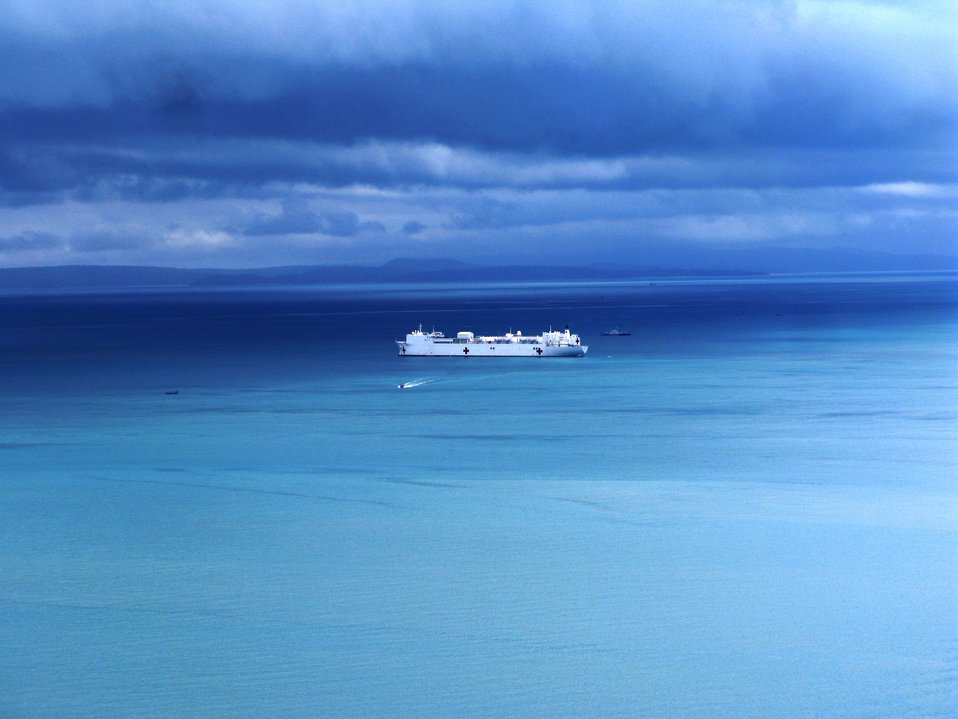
USNS Mercy Sails the Pacific Ocean

The Military Sealift Command hospital ship USNS Mercy (T-AH 19) sails the Pacific Ocean on June 15, 2010. Mercy is conducting Pacific Partnership 2010, the fifth in a series of annual U.S. Pacific Fleet humanitarian and civic assistance endeavors to strengthen regional partnerships.